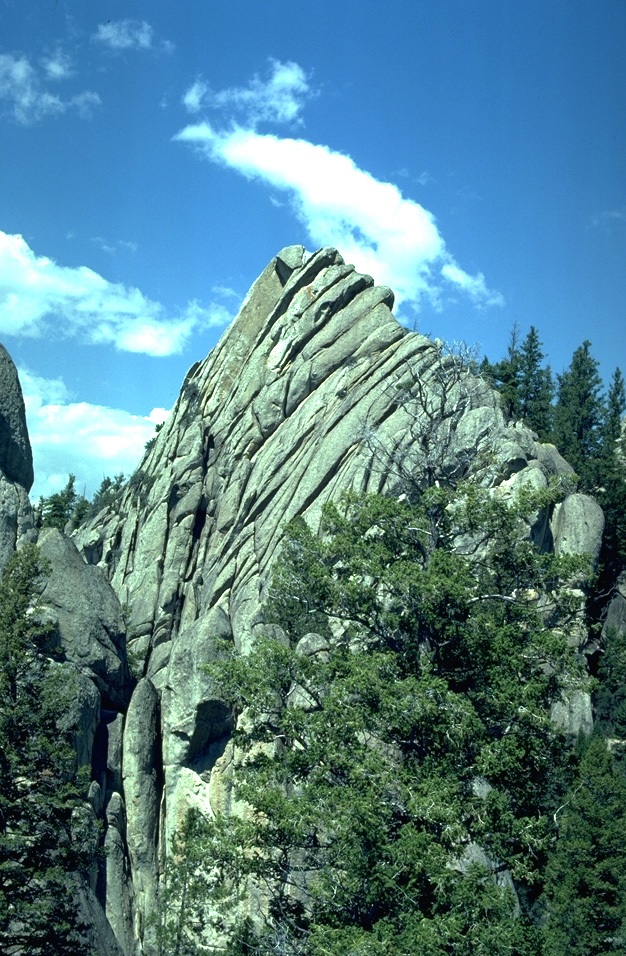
Humbug Spires